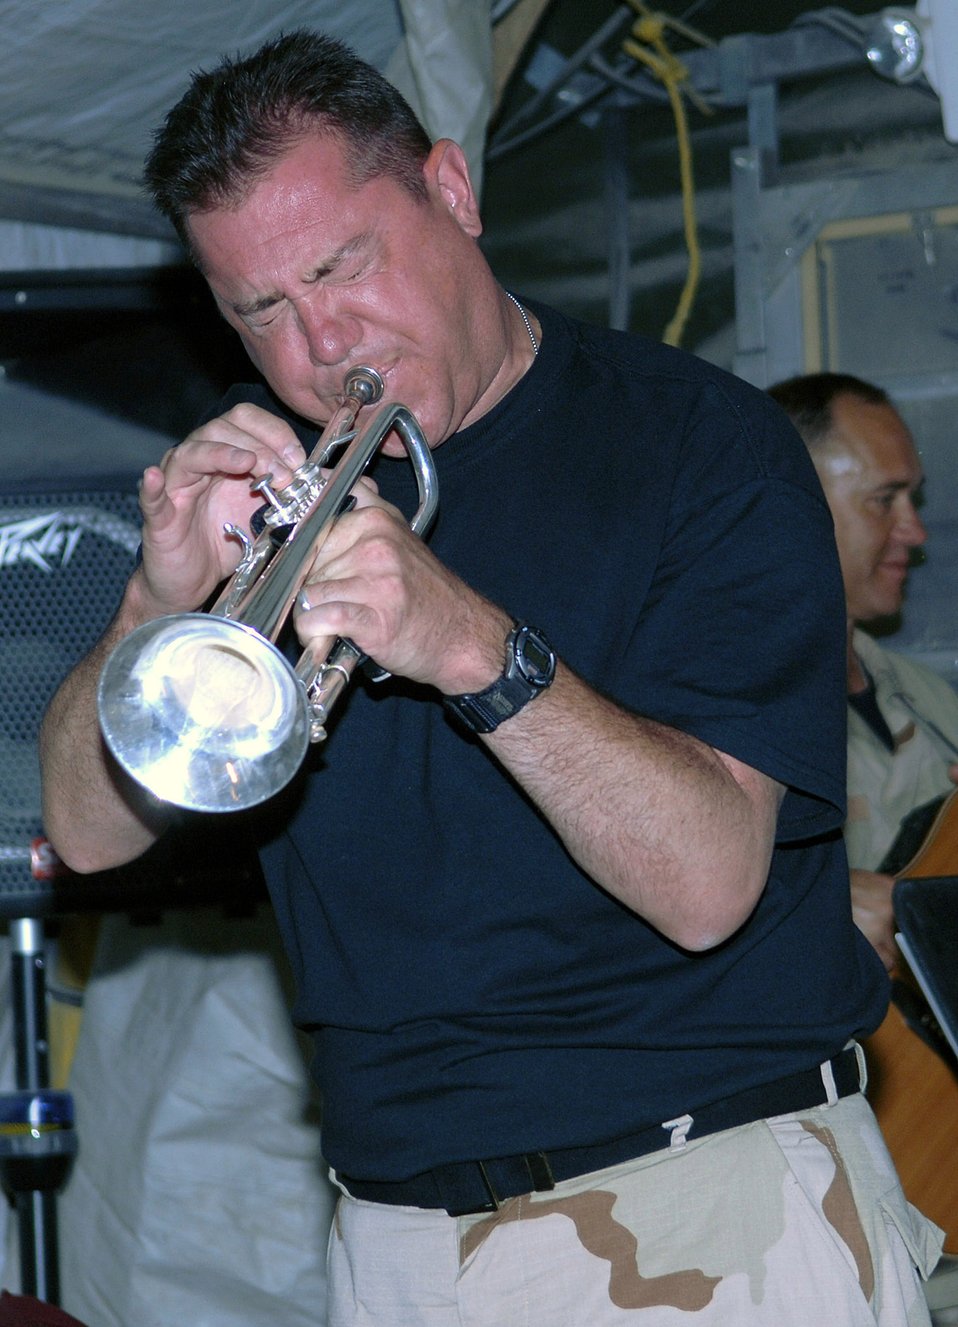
CENTAF Band performs unscheduled concert at Bagram

Staff Sgt. Marcel Marchetti hits a high note during an impromptu performance June 19 at Bagram Air Base, Afghanistan. Sergeant Marchetti is the U.S. Central Command Air Forces Band trumpet player and served as the evening's emcee, introducing the members of the band to the Airmen of the 455th Air Expeditionary Wing.